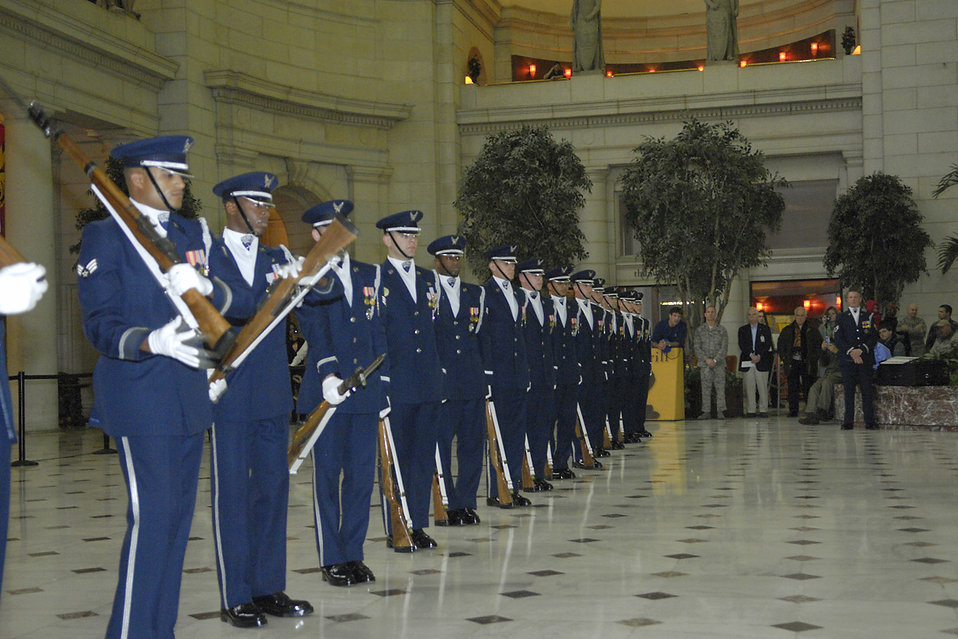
Air Force drill team kicks off 2008 season in D.C.

Air Force Honor Guard Drill Team members perform their new line drill sequence that represents the heritage of the Air Force Feb. 21 at Union Station in Washington, D.C. The unveiling drill is the first drill of the year and the formal presentation of the 2008 team to Air Force leadership and the general public. The drill team is the traveling component of the Air Force Honor Guard and tours Air Force bases worldwide showcasing the precision of today's Air Force to recruit, retain and inspire Airmen for the Air Force mission.